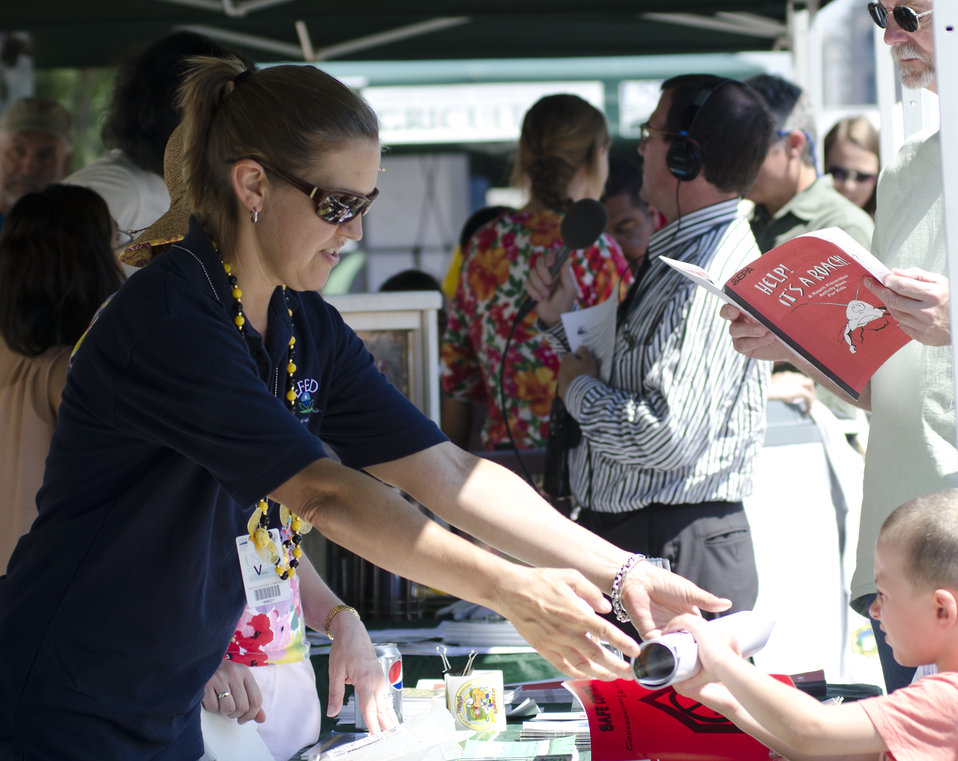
Peoples Garden Pollinator Display at the U.S. Department of Agriculture in Washington, DC, on Friday, June 21, 2013.